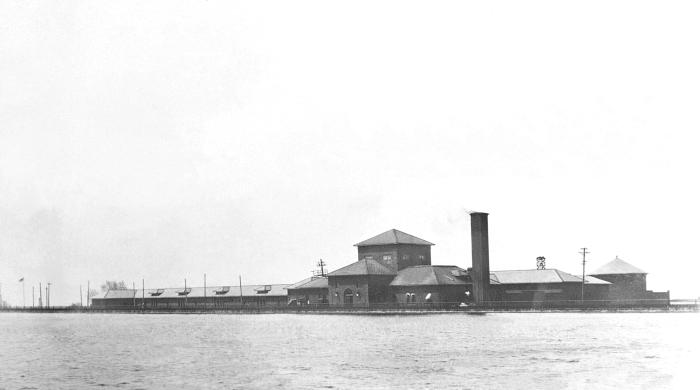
This historic 1917 photograph showed the exterior view of the Minneapolis municipal water filtration plant as seen from across an adjacent raw water basin. This is one of a series of instructional images used by the Minnesota Board of Health in order to train its public health workers.